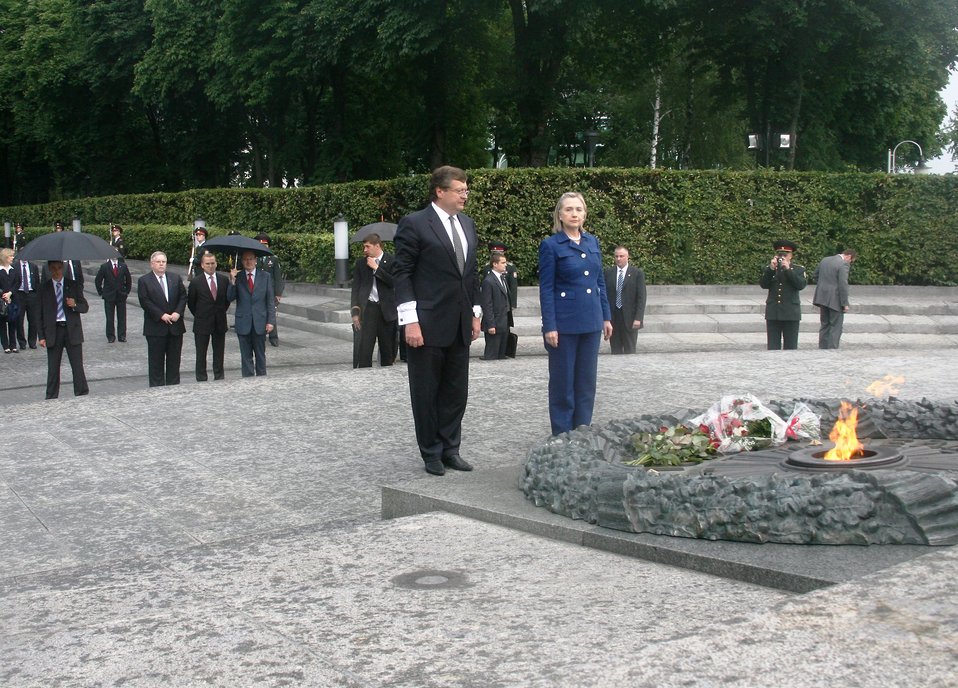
Secretary Clinton and Ukrainian Foreign Minister Visit Tomb of the Unknown Soldier

U.S. Secretary of State Hillary Rodham Clinton and Ukrainian Foreign Minister Kostyantyn Gryshchenko visit the Tomb of the Unknown Soldier in Kyiv, Ukraine, on July 2, 2010.